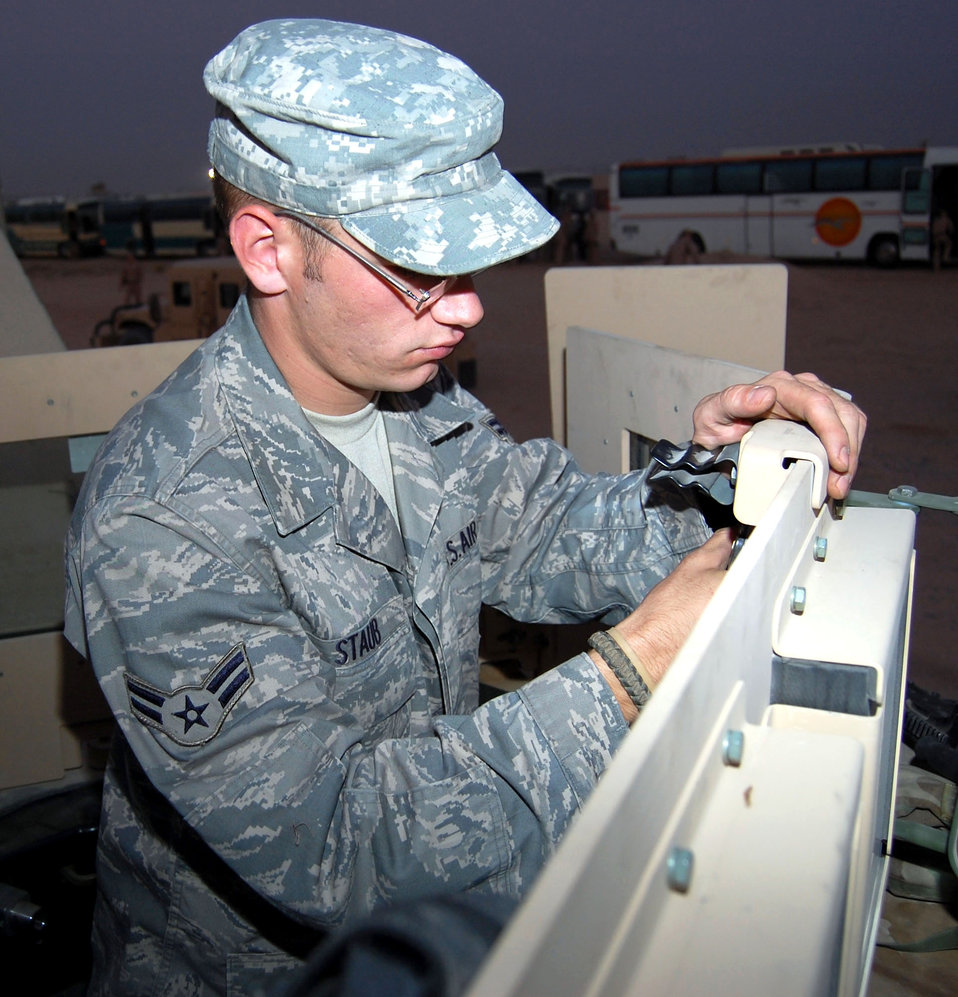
Convoy preparations

Airman 1st Class Clayton Staub adjusts an M-4 carbine mount in the turret of an Humvee prior to a convoy mission Nov.12 at Camp Bucca, Iraq. Airman Staub, an 887th Expeditionary Security Forces fire team member, is from Nellis Air Force Base, Nev.